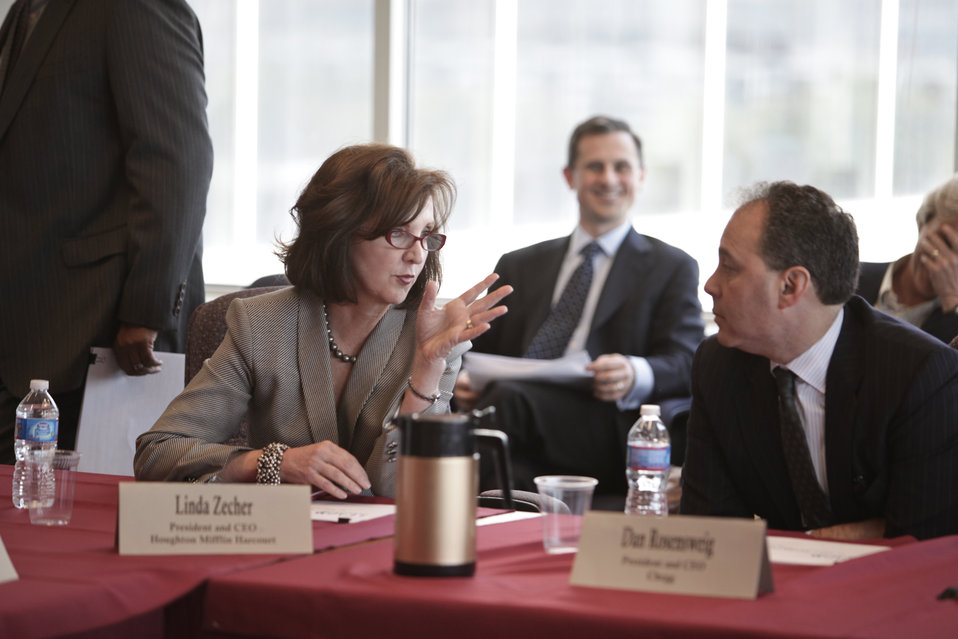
FCC Chairman Host Leaders From the Digital Education Ecosystem

President and CEO of Houghton Mifflin Harcourt, Linda Zecher and President and CEO of Chegg, Dan Rosensweig attends FCC Chairman's event at FCC's HQ in Washington, DC on March 29, 2012.